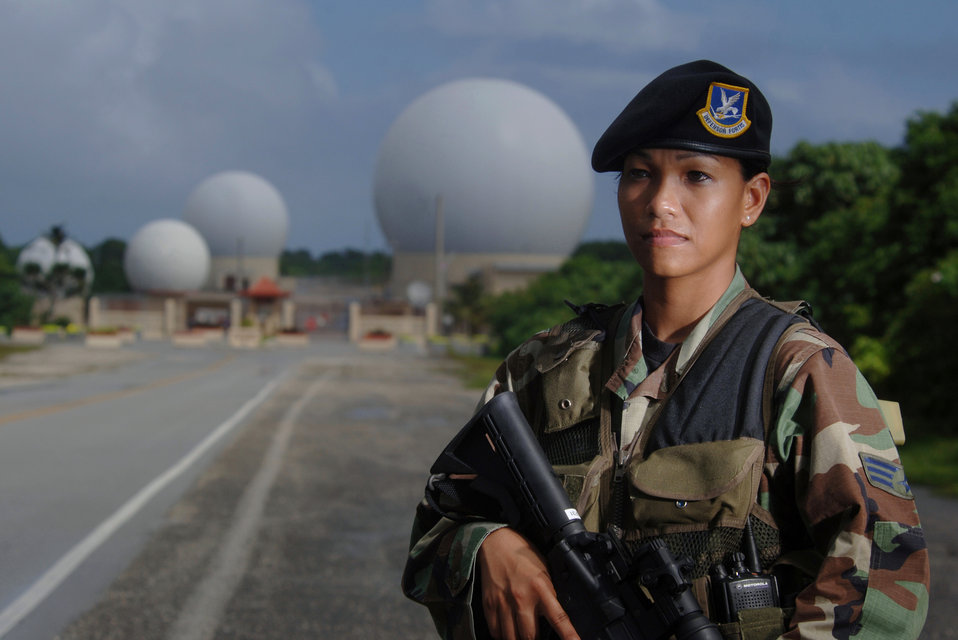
Airman patrol

ANDERSEN AIR FORCE BASE, Guam (AFPN) -- Senior Airman Maria Ronquillo patrols the perimeter of 22nd Space Operations Squadron's Detachment 5 here. She is assigned to the Guam Air National Guard's 254th Security Forces Squadron.